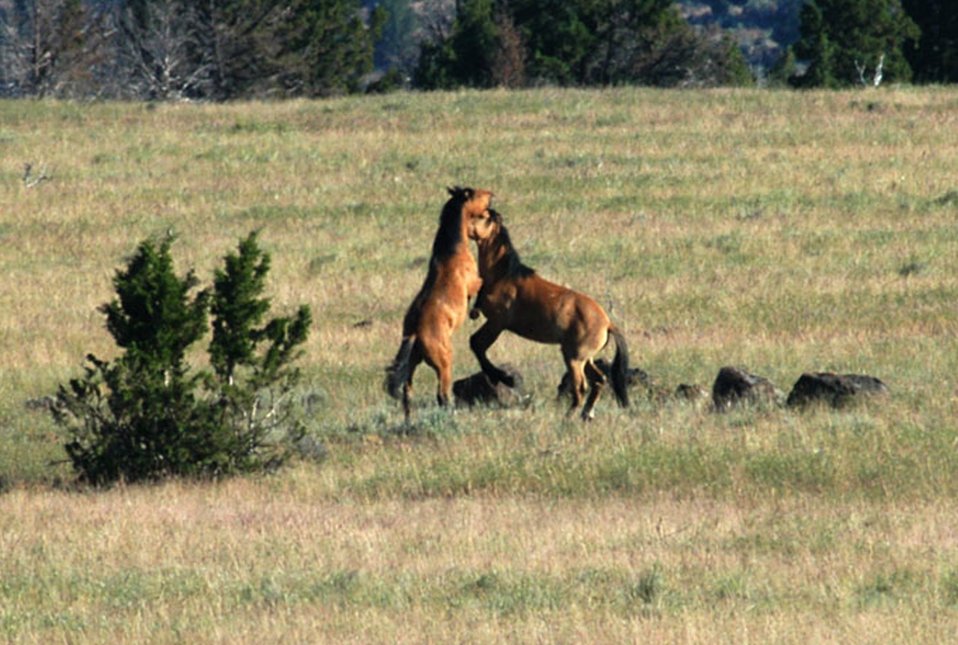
Kiger horses roam the plateaus of the Kiger Wildhorse Herd Management Area near Steens Mountain in Southeastern Oregon.